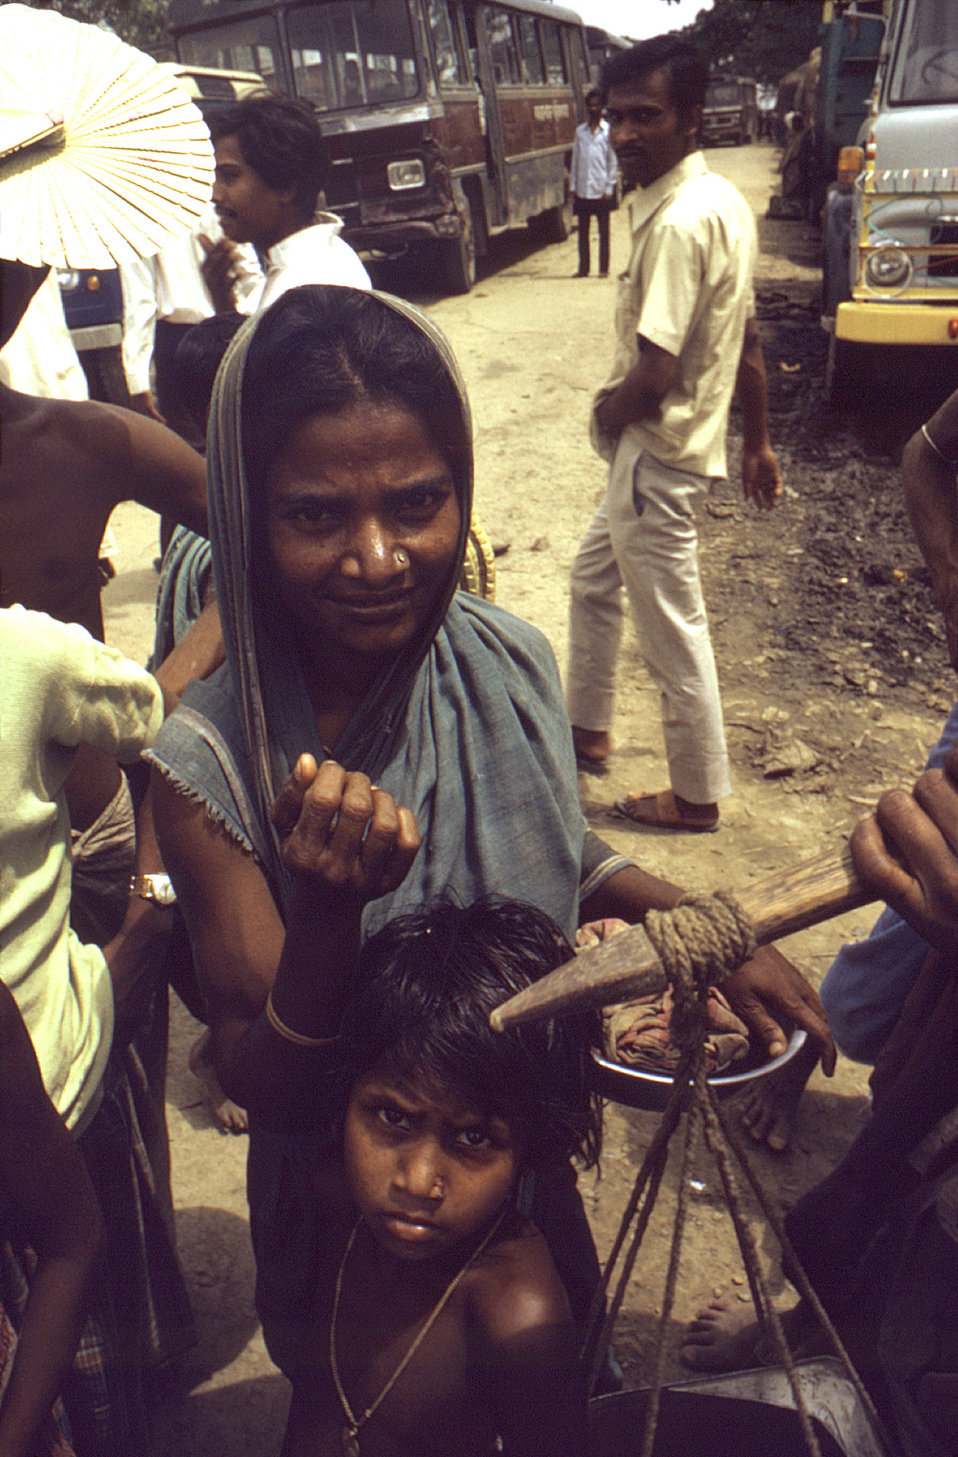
Photographed in 1974, this image depicted a Bengali mother and child in a Bangladesh village during the worldwide smallpox eradication program, which included that region.